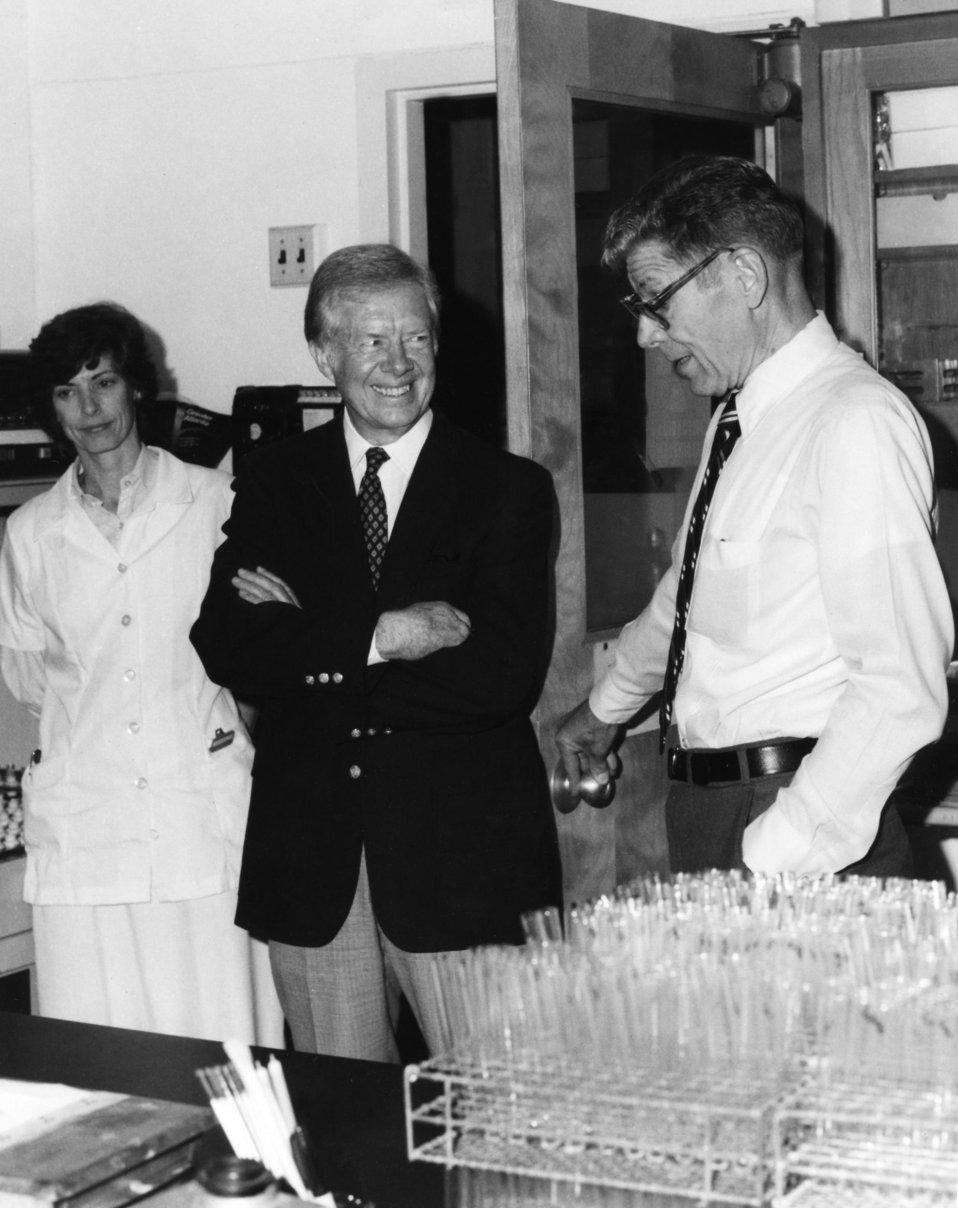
This photograph showed former U.S. President Jimmy Carter (1977-1981) as he was speaking with laboratorians during his 1985 visit to the Centers for Disease Control and Prevention (CDC).